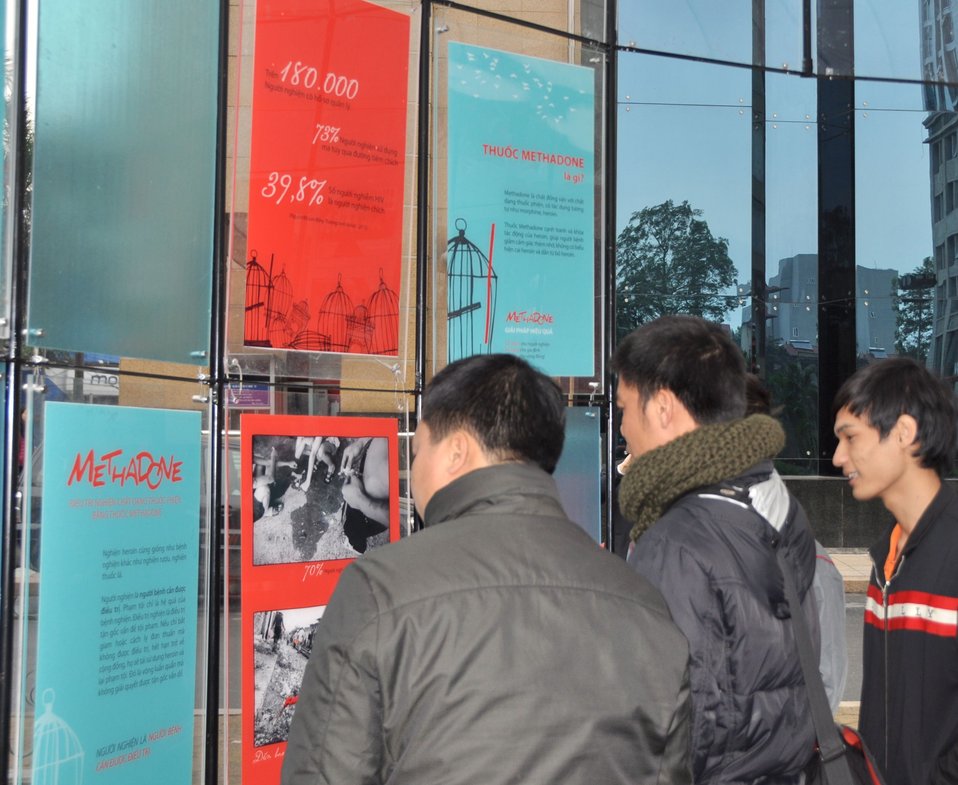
Photo Exhibition Launch

USAID/Vietnam